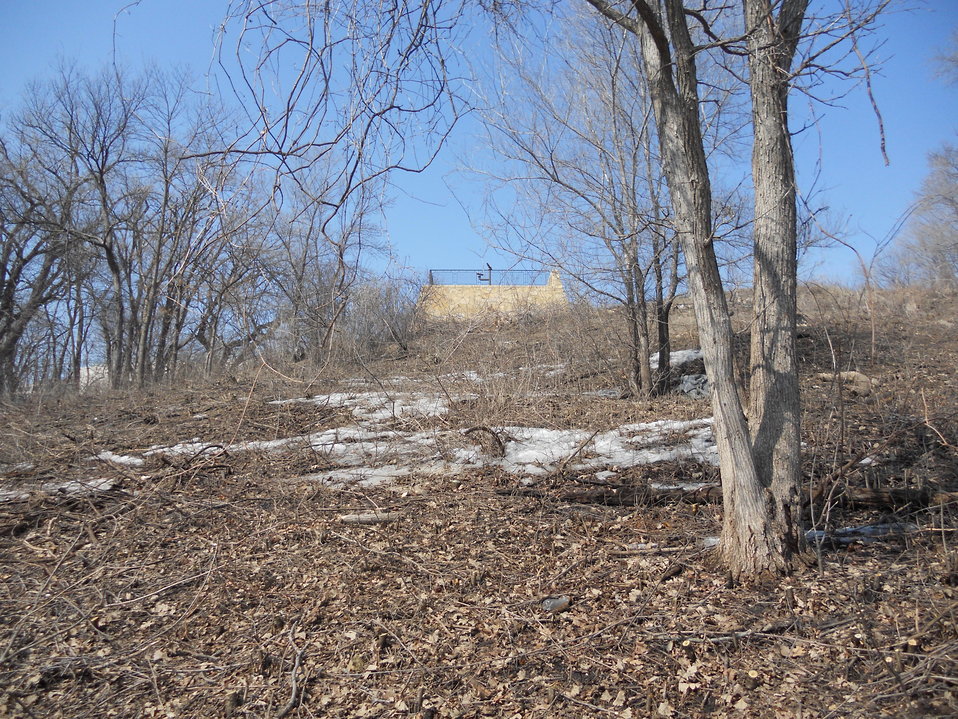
Brushy Hillside

Before: The hillside below the Visitor Center overlook.